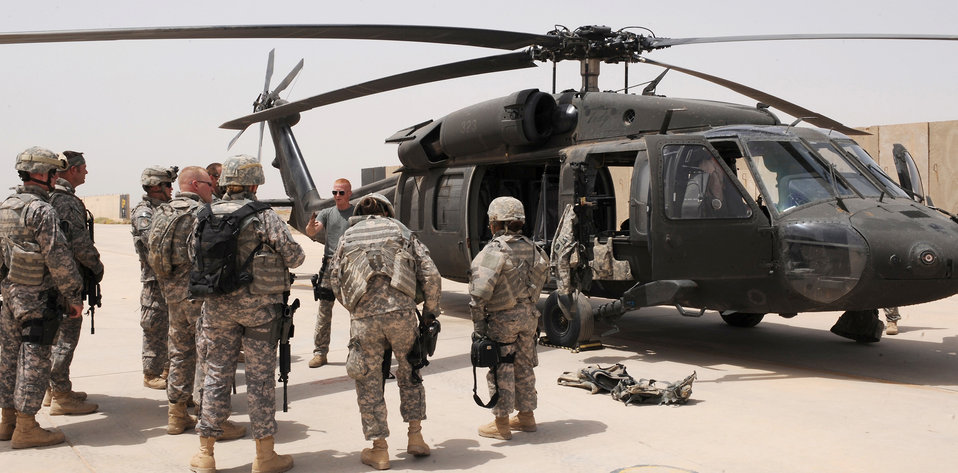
Air Force team conducts air-assault training from Army helos

Airmen from the 532nd Expeditionary Security Forces Squadron's quick reaction force team go over their training mission before boarding an Army helicopter from the C Company, 1-137th Aviation Regiment May 23 at Joint Base Balad, Iraq. Airmen trained on egress, ingress and setting up security for the helicopter. Members of the 532nd ESFS QRF are often called